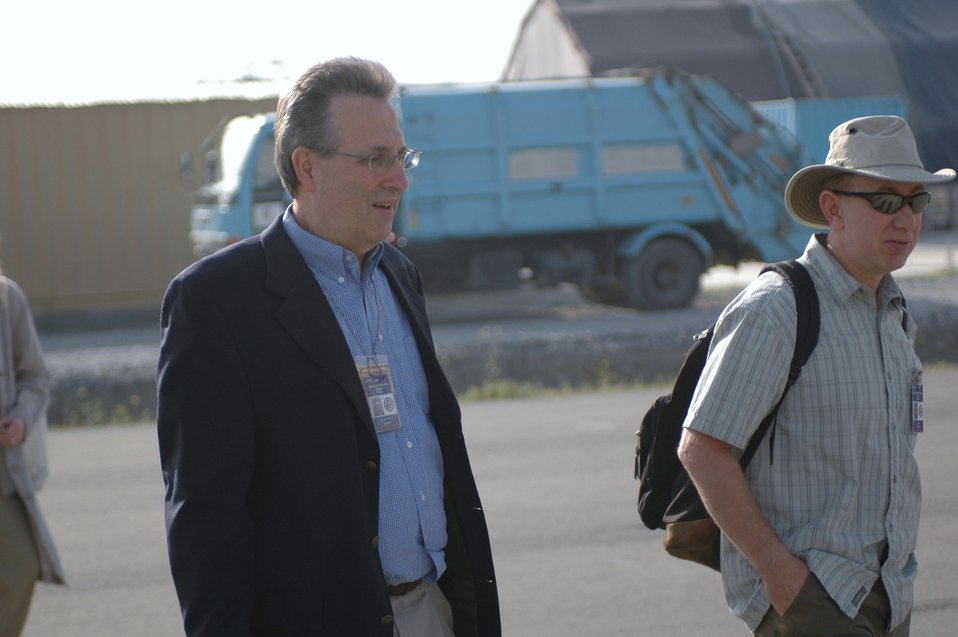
Dr Shah Visits Argandab April 10, 2010